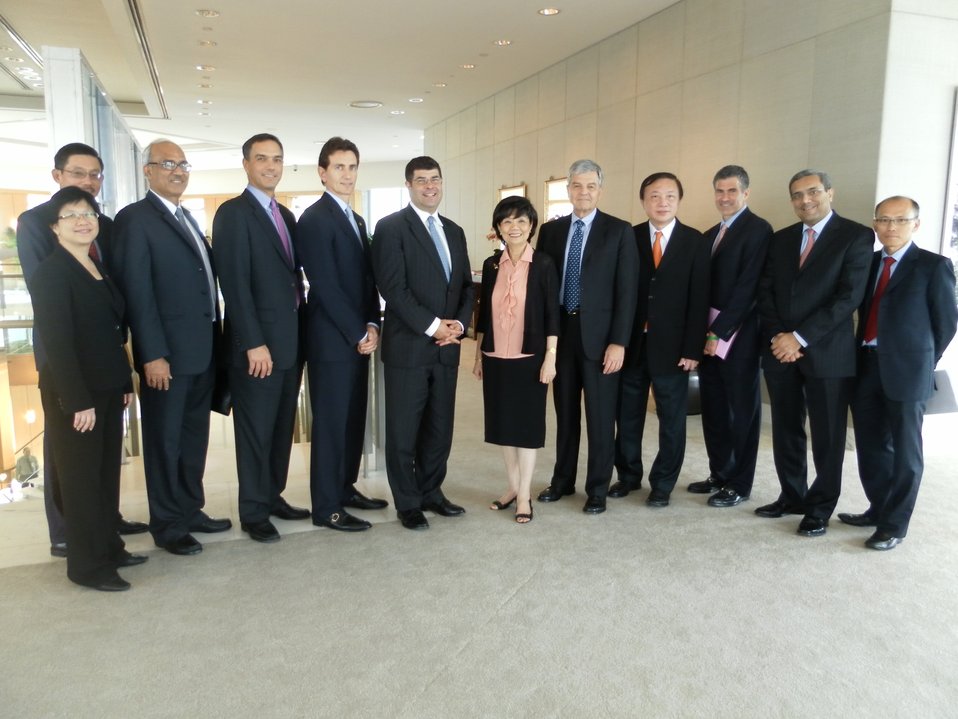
Deputy Secretary Wolin's Trip to the Pacific Rim

On Friday, May 20, 2011, Deputy Secretary Wolin also met with American and Singaporean business leaders to discuss economic and financial issues in the region.